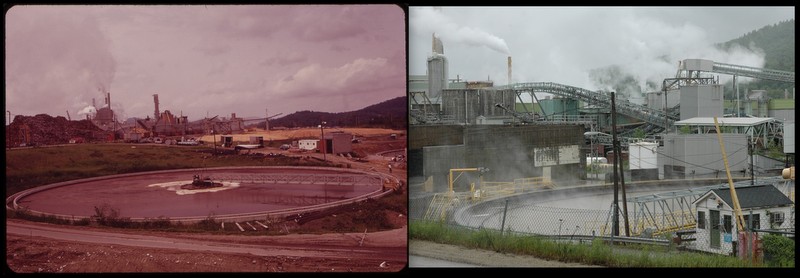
Jay, ME 1973 and 2012

'Then' Documerica Photo: June, 1973 Primary Clarifier at the International Paper Company Mill at Jay on the Androscoggin River 06/1973 by Charles Steinhacker.

June, 2012 photograph by Victoria Hampshire.

Join the project at www.flickr.com/groups/ourenvironment